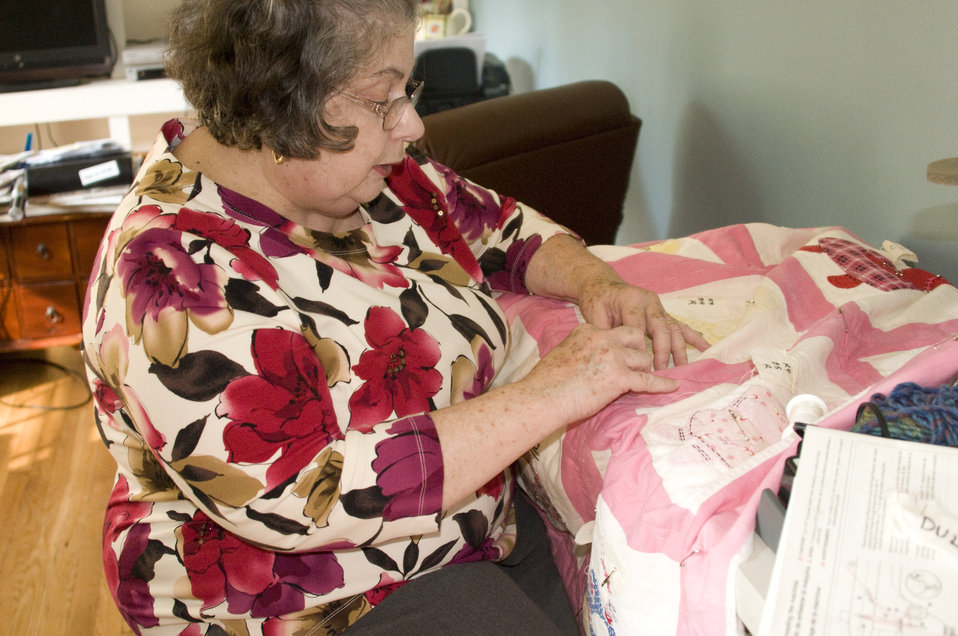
The woman pictured here is a rheumatoid arthritis patient who was not letting her painful condition become a daily impediment in her life, and thereby, keep her from enjoying those activities that bring her pleasure, including the quilt stitching in which she was engaged at the time of this photograph.